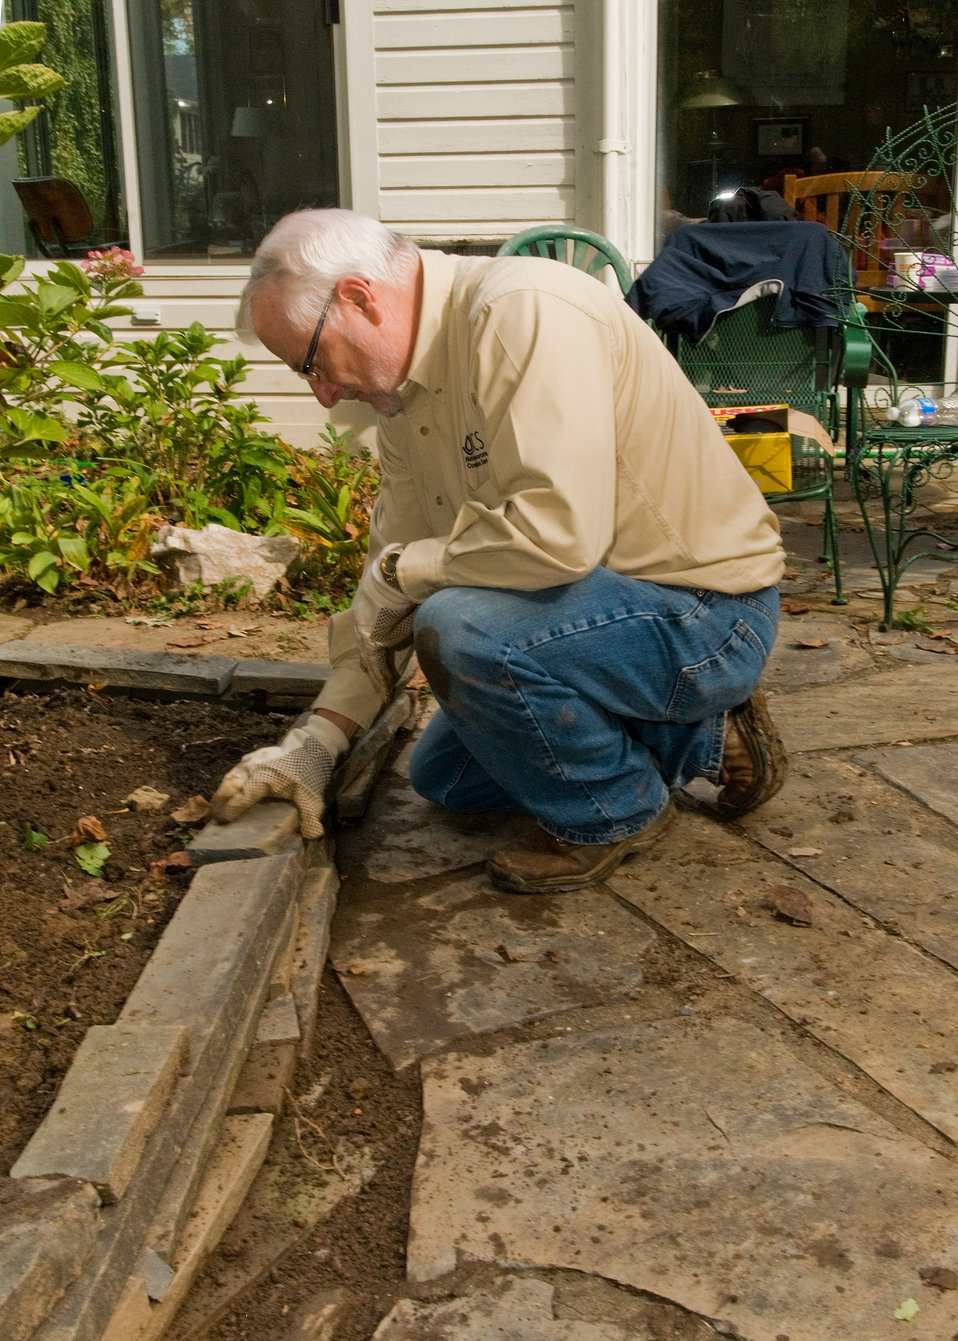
Dave White, Chief, Natural Resources Conservation Service repairs a stone wall on the patio that Dr. Hugh Hammond Bennett the first chief of the Natural Resources Conservation Service then the Soil Erosion Service built when Dr. Bennett lived at “Eight Oaks.” Chief White is the fourteenth chief of NRCS. The work at Dr. Bennett’s home in McLean, Virginia on Friday, October 15, 2010 is part of the 2010 celebration of the 75th Anniversary of the Natural Resources Conservation Service. USDA Photo 10di1524-15 by Bob Nichols.